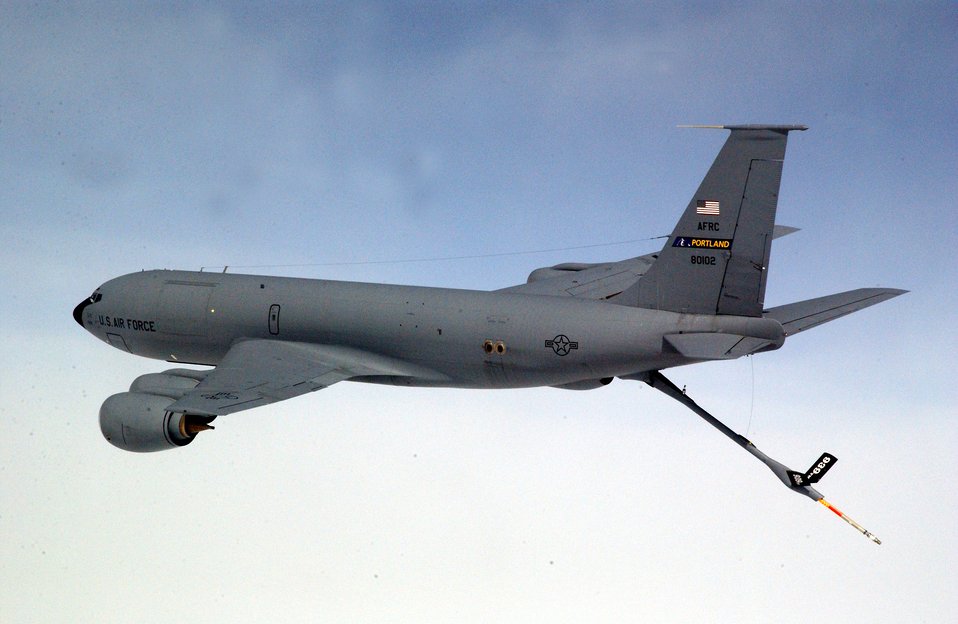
Air Force evaluating KC-X proposals

Air Force officials are looking at proposals for a new strategic refueling aircraft, referred to as the KC-X, to replace the aging KC-135 Stratotanker.